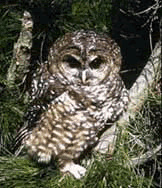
Northern Spotted Owl

An adult Northern Spotted Owl.